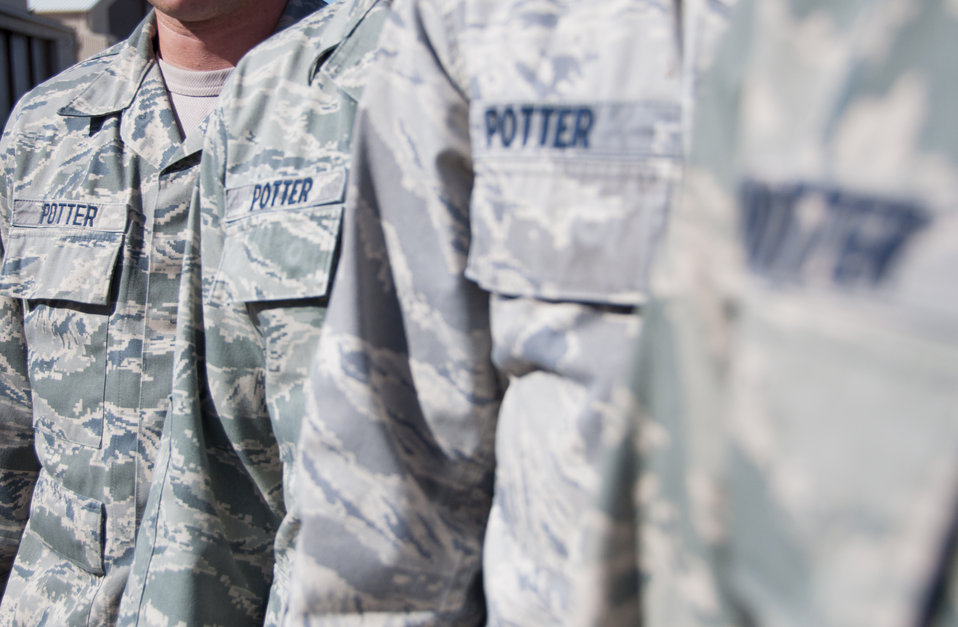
Serving together

Four brothers serve alongside each other in the Air Force Reserve’s 419th Fighter Wing. They say that wearing the uniform together gives them a greater sense of pride than if they were wearing it alone.